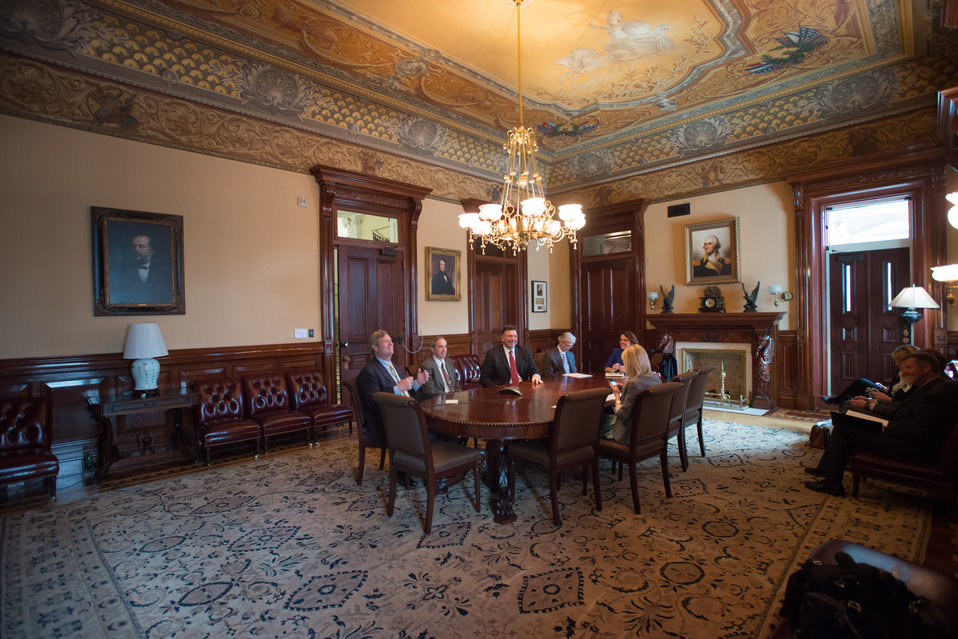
(L to R) Agriculture Secretary Tom Vilsack, Spruce Haven Farm and Research Center General Partner Doug Young, Innovation Center for U.S. Dairy Chief Executive Officer (CEO) Tom Gallagher, and Dairy Management Inc. Strategic Initiatives Vice President Christina McDermott chat with Agriculture Office of Communication Press Secretary Courtney Rowe as she establishes a teleconference call with news media, after the signing of a Memorandum of Understanding (MOU) at the Innovation Center For U.S. Dairy Sustainability Council Meeting, on Wednesday, Apr. 24, 2013. The teleconference took place in the historic Secretary of War suite, at the White House, in Washington, D.C. The objectives of the MOU are to increase the construction of anaerobic digesters and explore innovative ways to use products previously considered waste streams from dairy production, processing and handling.